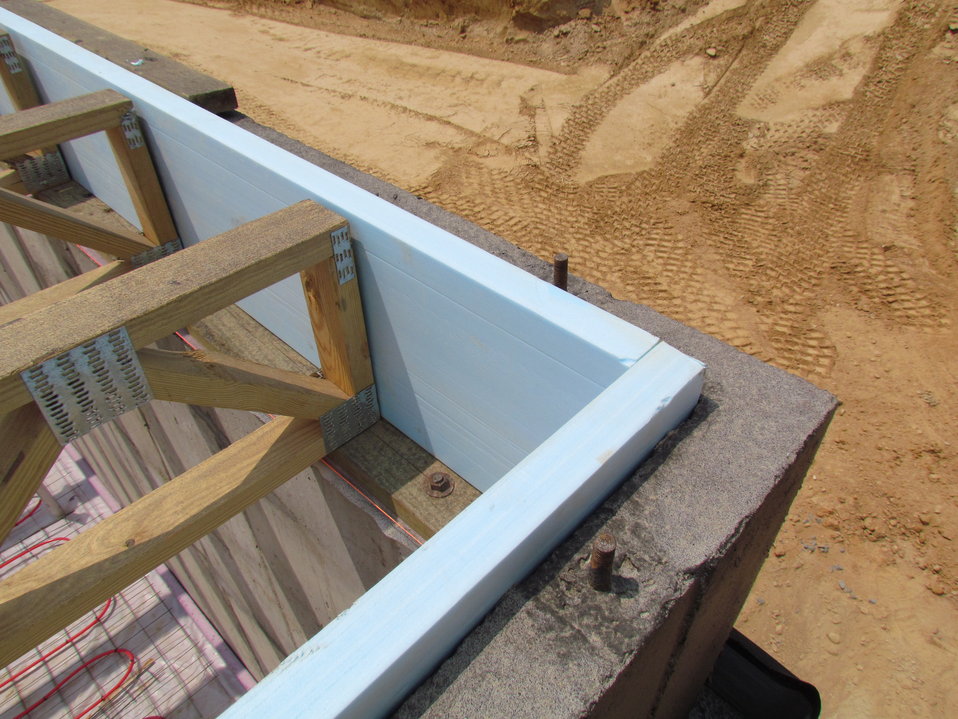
Net-Zero Energy Residential Test Facility - Showing extruded polystyrene insulation providing thermal break between floor trusses and poured concrete basement walls.